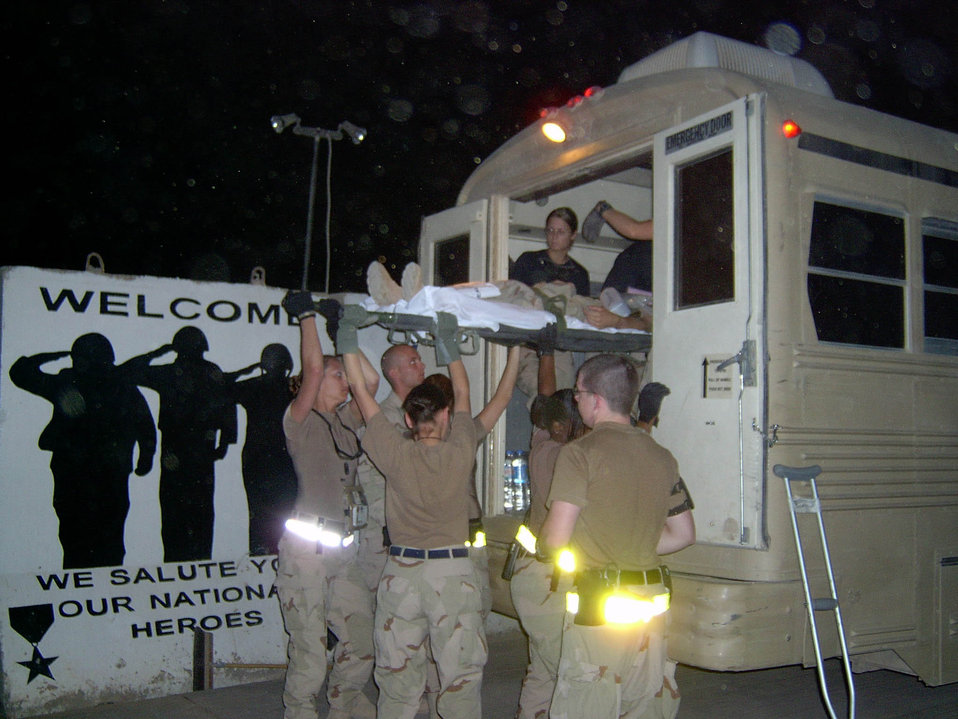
Total force Samaritans in the sand help friend, foe

BALAD AIR BASE, Iraq -- Airmen with the casualty staging facility here load patients onto an ambulance bus that take them to an aircraft for a flight to Germany. Patients in Iraq are usually moved out of theater within 24 to 48 hours of being wounded. During the Vietnam War, it could take up to six weeks to have a patient ready to travel.